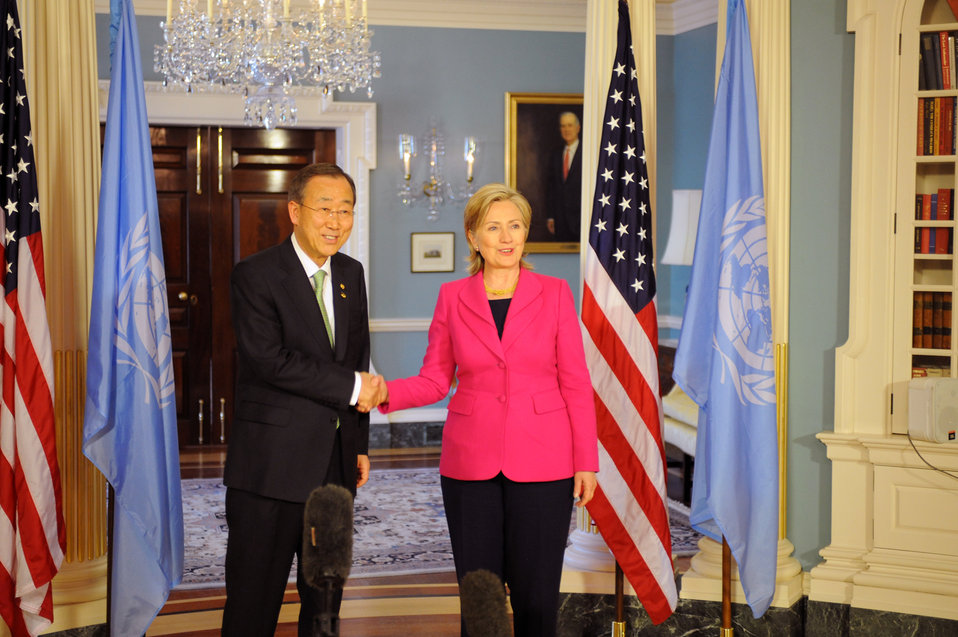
Secretary Clinton Meets with UN Secretary General

U.S. Secretary of State Hillary Rodham Clinton conducts a bilateral meeting with UN Secretary-General Ban Ki-moon in the Treaty Room of the U.S. Department of State in Washington, DC April 12, 2010.